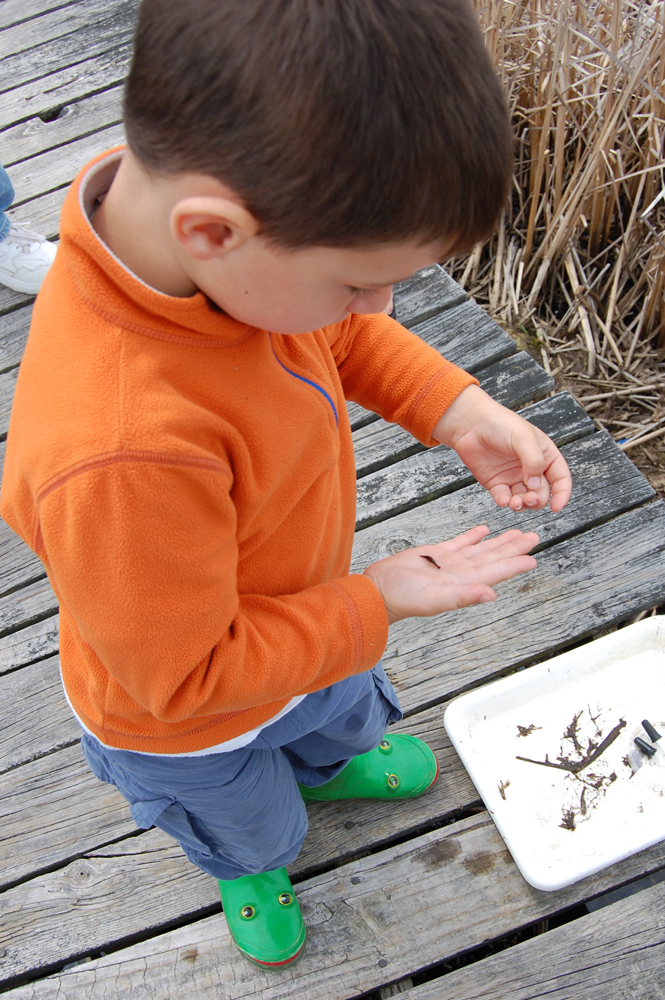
Sense of Wonder Camp

Sring 2009 session of the Sense of Wonder Camp, a camp for children ages 3-4 at Parker River National Wildlife Refuge.Credit: Kate Toniolo/USFWS